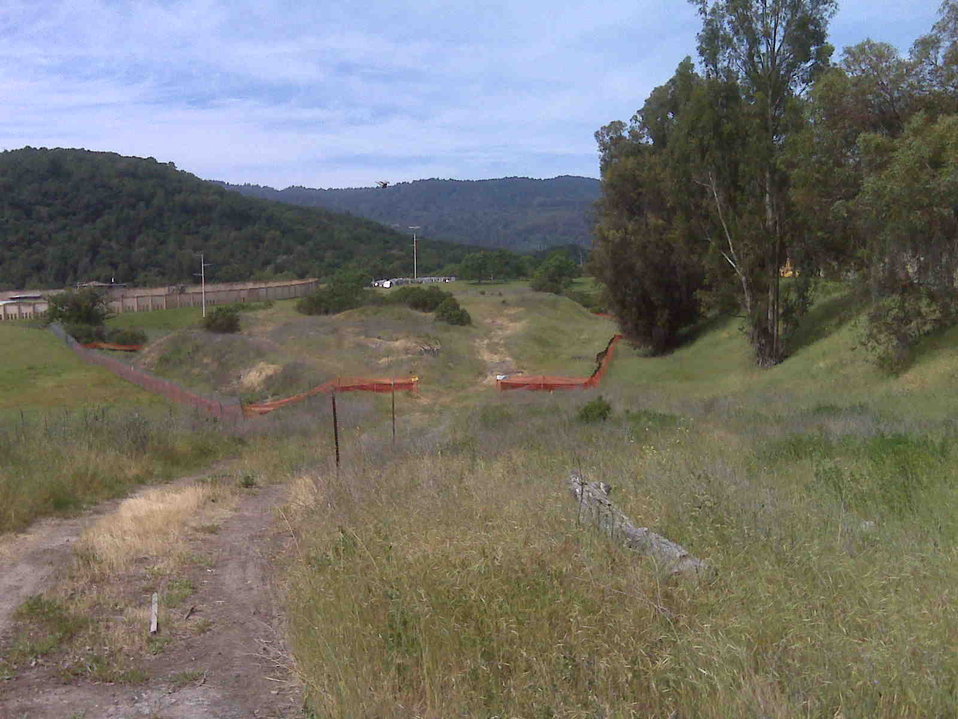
SLAC landfill cleanup

These photos show the Clean Landfill, the site of the largest Recovery Act-funded soil and debris removal project at the SLAC National Accelerator Laboratory, before and after cleanup.